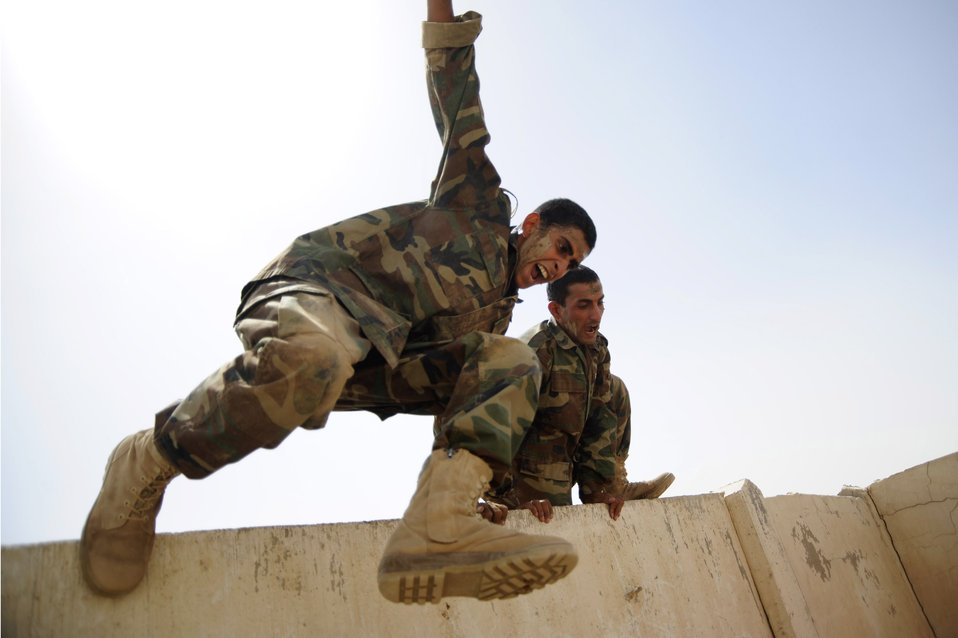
Training instructors build tactical course for Iraqi airmen

Iraqi air force warrant officers jumps over the high wall portion of the basic military training tactical course at Al Taji Air Base, Iraq, Sept. 27.